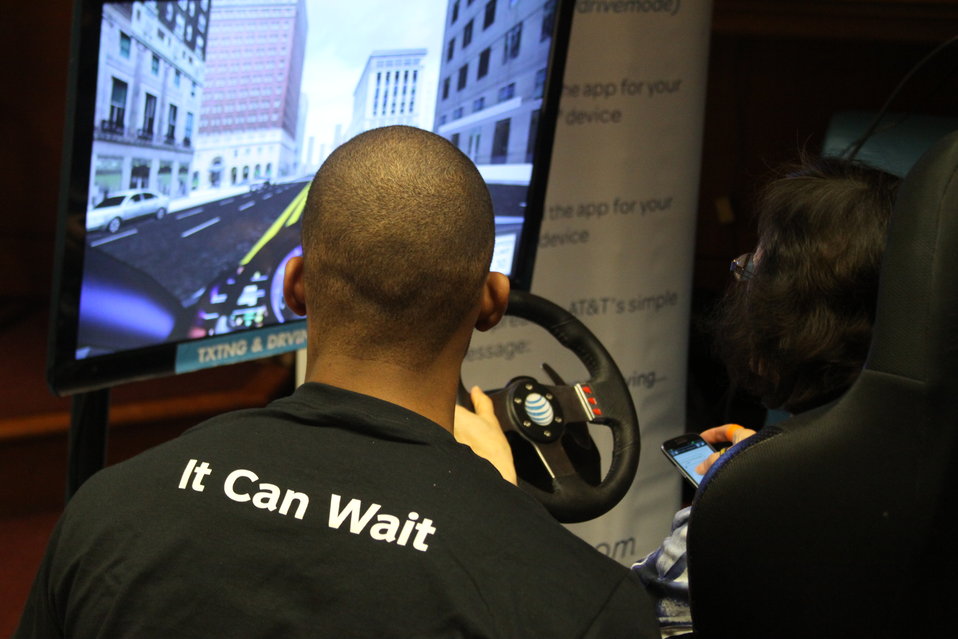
Distracted Driving Technology Showcase April 19, 2013